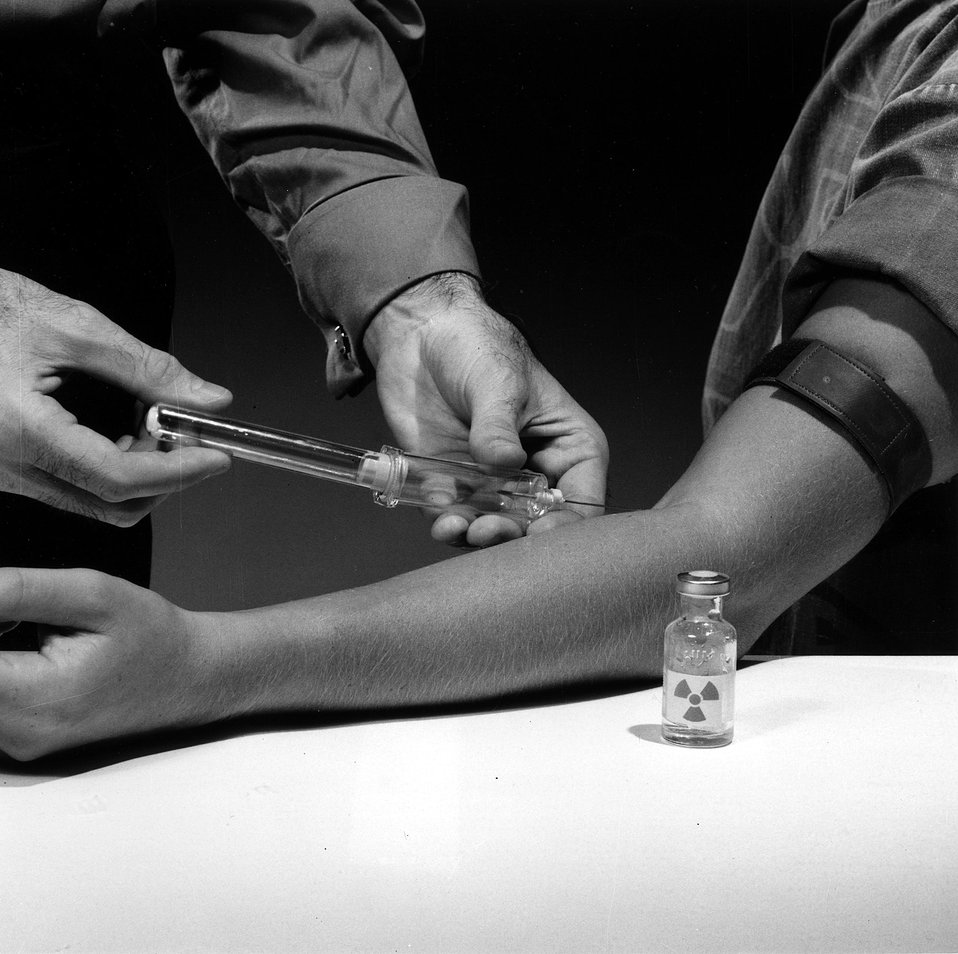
A diagnostic kit for labeling a patient's own red blood cells has been developed at Brookhaven.